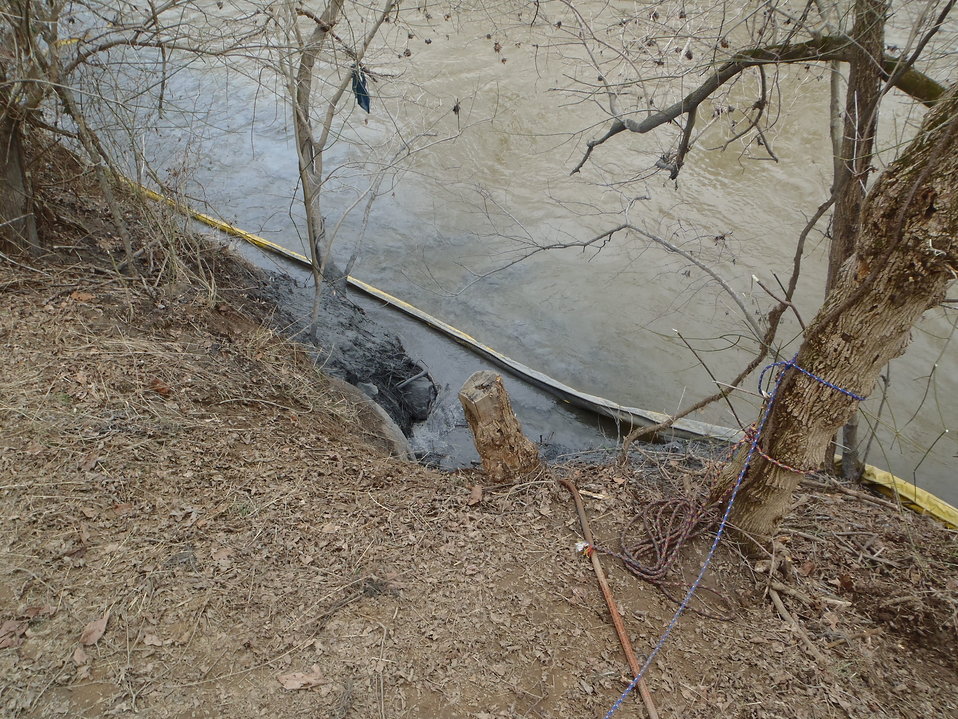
Dan River Release Point

The Dan River bank with residual dark grey
coal ash, USFWS/Steven Alexander